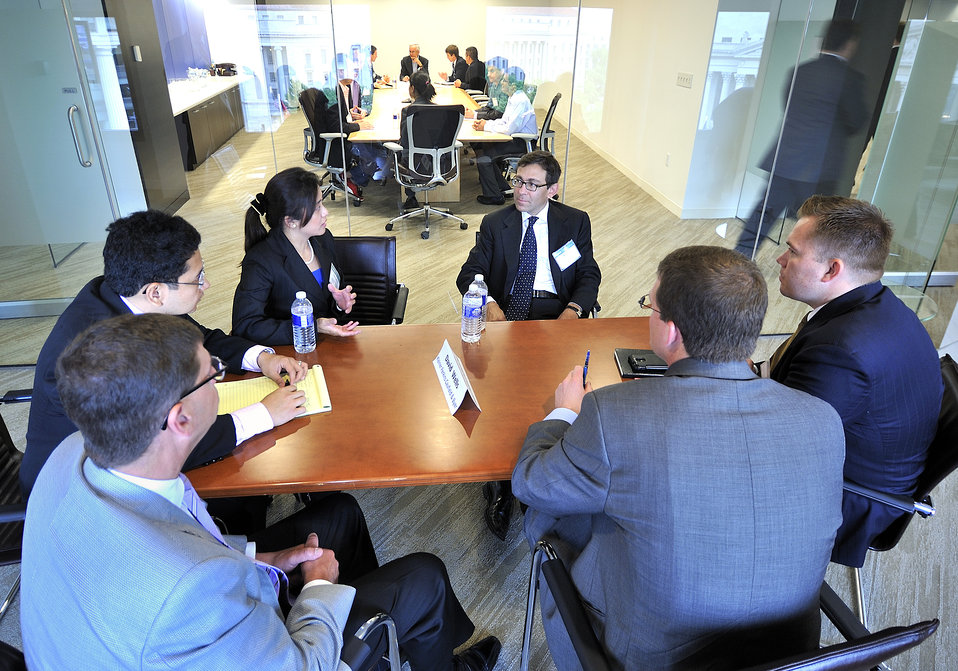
National Clean Energy Business Plan Competition

The National Clean Energy Business Plan Competition inspired nearly 300 university teams across the country to create new businesses to commercialize promising energy technologies developed at U.S. universities and the National Laboratories.